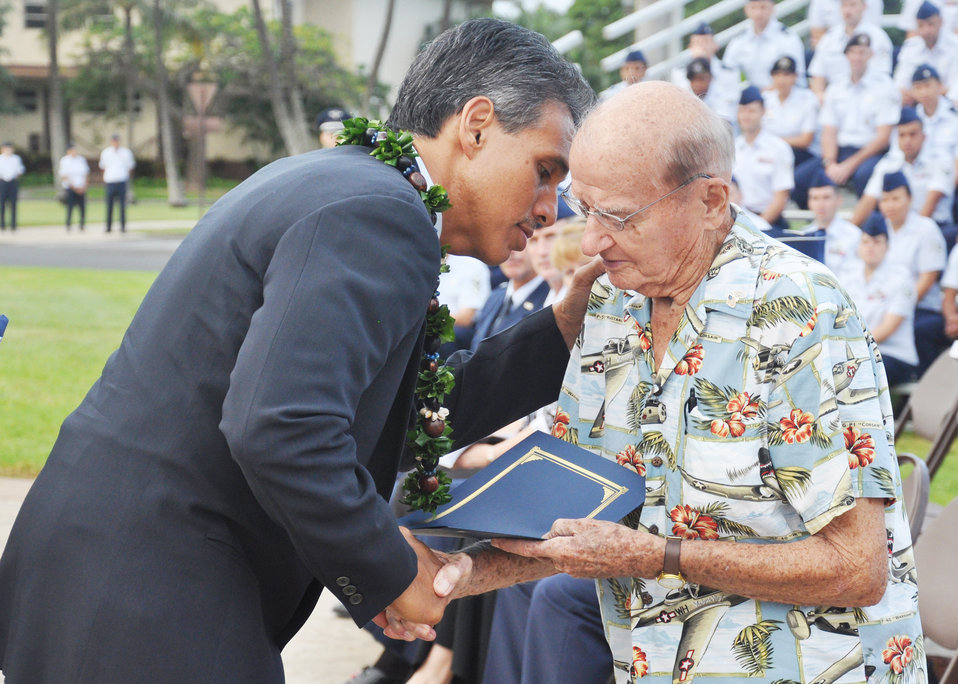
Hickam pays tribute to Airmen's storied legacy

Hawaii Lieutenant Governor James Aiona Jr., pays tribute to retired Col. Andrew Kowalski Dec. 7, 2009, here, during a ceremony that marked the anniversary of the Dec. 7, 1941, attacks on Pearl Harbor Navy Fleet and the Army Air Corps fields of Hickam, Wheeler and Bellows. Survivors and their families from the infamous day were on hand to pay tribute to their lost brothers and sisters in arms. Wreaths and tokens of honor were laid at the base of the memorial at Atterbury Circle. Colonel Kowalski, then a master sergeant, was called to action as a casualty collection officer during the attacks.